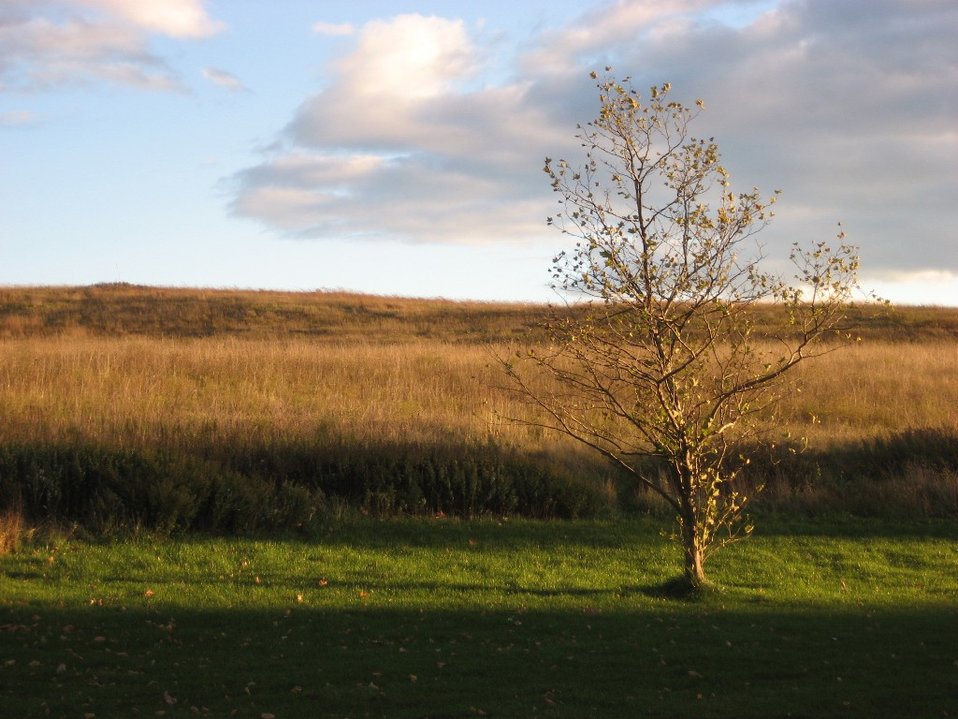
Uploaded by request of Skip Doyle

Taken in Croton Point Park, Westchester County, New York

This 70 year-old county trash dump was capped in 1995 and converted to county parkland. A pennisula prominently jutting into the historic Hudson River, the park now offers recreational facilities, houses an environmental education center, and hosts the annual Clearwater Festival.